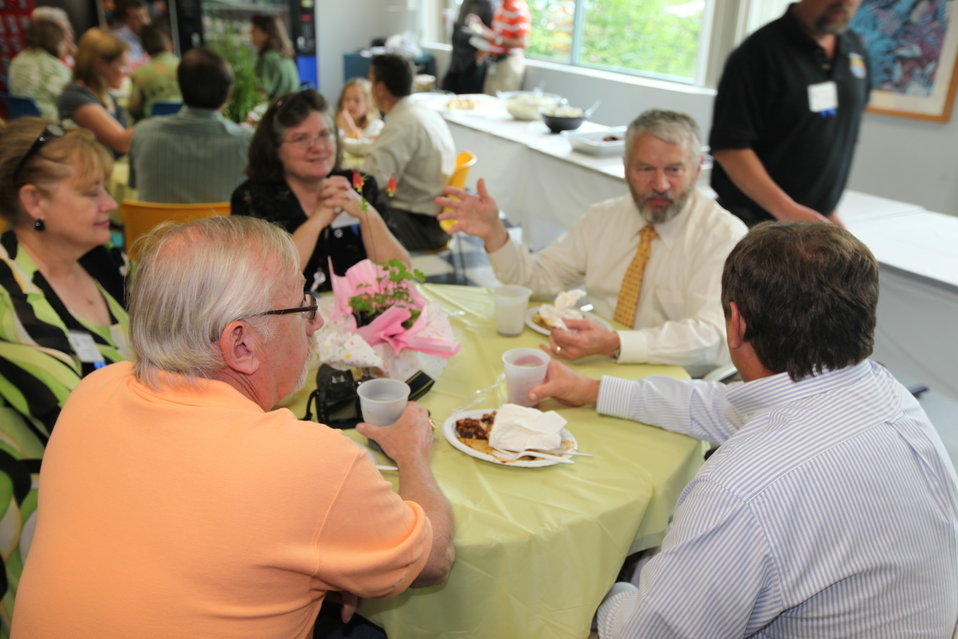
Northeast Region Employee Appreciation Awards

Deputy Director Rowan Gould attending luncheon